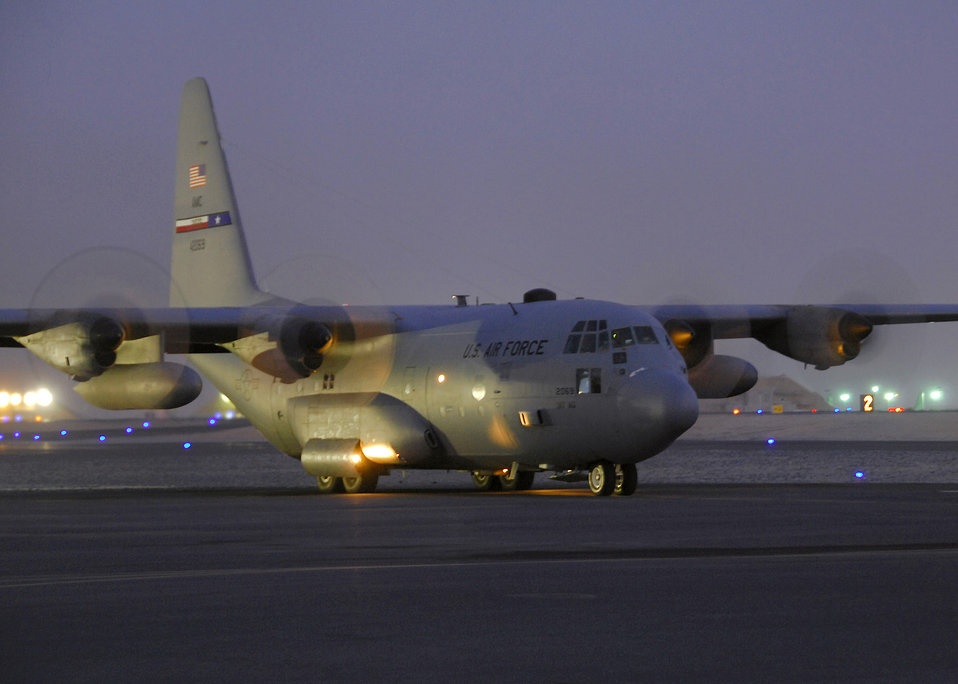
Sept. 30 airpower summary: C-130s support airlift missions

A C-130 Hercules assigned to a Southwest Asia base prepares to depart on a sortie en route to Iraq. C-130s transport passengers and cargo in support of Operations Iraqi and Enduring Freedom.